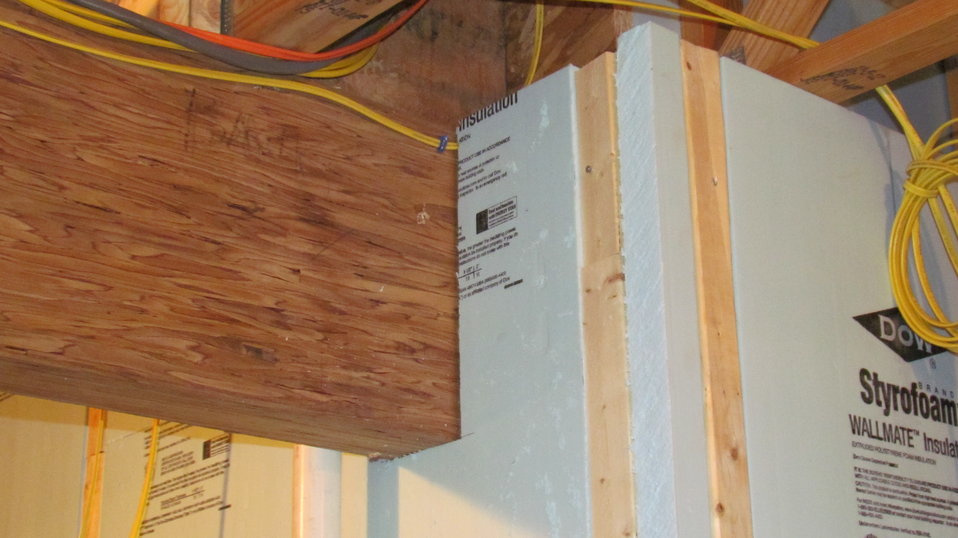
Basement insulation surrounding the laminated support beam in the basement.